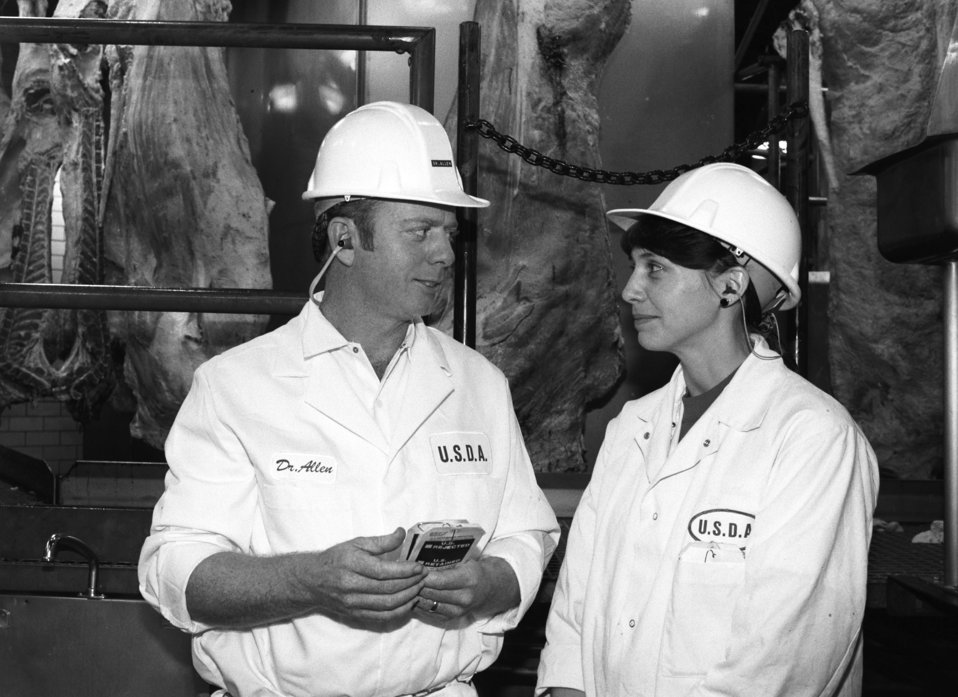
U.S. Department of Agriculture (USDA) Food Safety Inspection Service (FSIS) inspectors inspect beef using a Streamline Inspection System (SIS) at a processing plant in Plainview, TX on January 22, 1991.